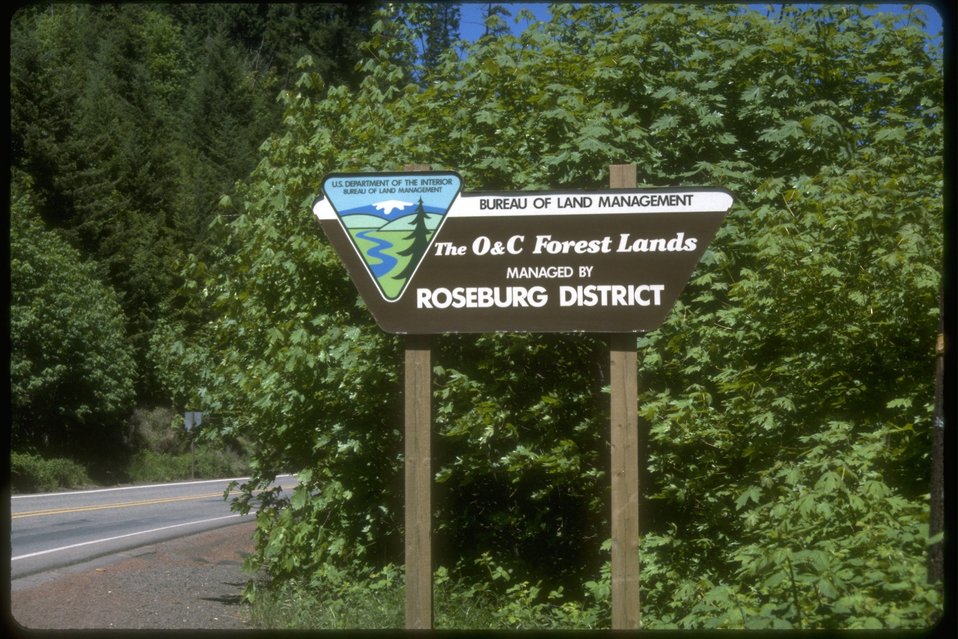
Oregon & California (O&C) Forest Lands (Sign).